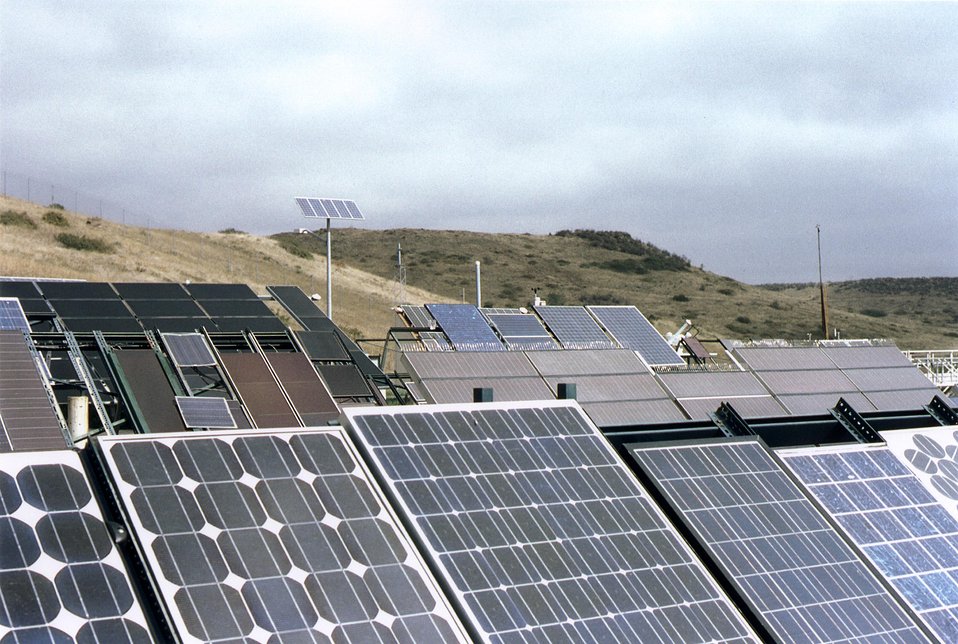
PHOTOVOLTAIC PANELS BEING TESTED AT NATIONAL RENEWABLE ENERGY LABORATORY.

ENGINEERS AT NREL TEST PROTOTYPE PHOTOVOLTAIC MODULES PRODUCED BY VARIOUS COMPANIES PARTICIPATING IN A TESTING AND MANUFACTURING PROJECT. SCIENTISTS INVESTIGATE WAYS TO IMPROVE DESIGN AND EFFICIENCY OF PHOTOVOLTAIC SYSTEMS.